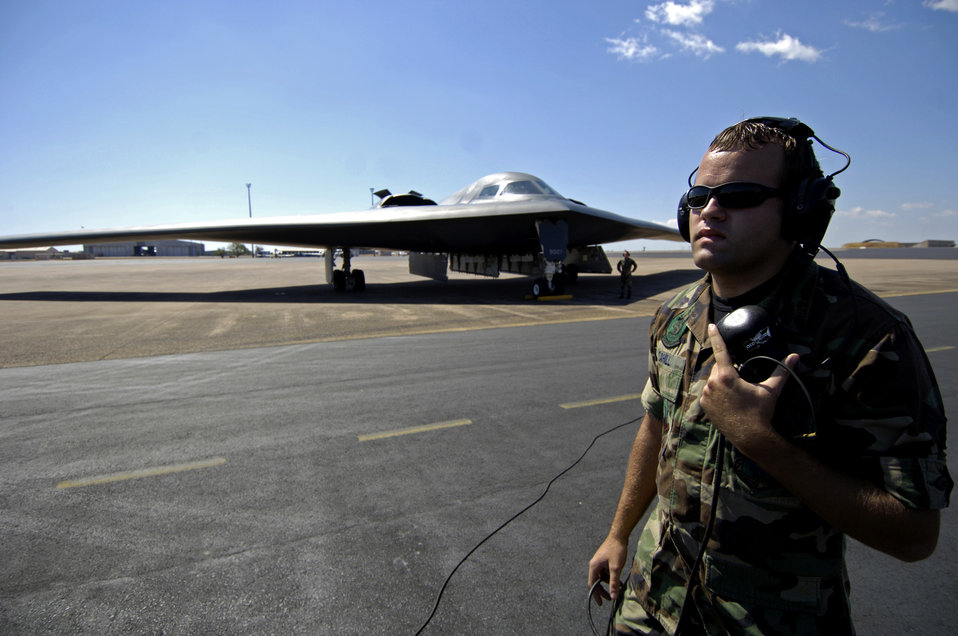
Green Lighting tests Pacific bomber force

Senior Airman Cory Cahill listens to a B-2 Spirit aircrew during exercise Green Lightning at Royal Australian Air Force Base Darwin on July 27. The exercise tests U.S. capabilities and provides operational familiarity in the region for the Pacific bomber presence while also serving to enhance relations with the Australians. Airman Cahill is from the 509th Aircraft Maintenance Squadron at Whiteman Air Force Base, Mo.